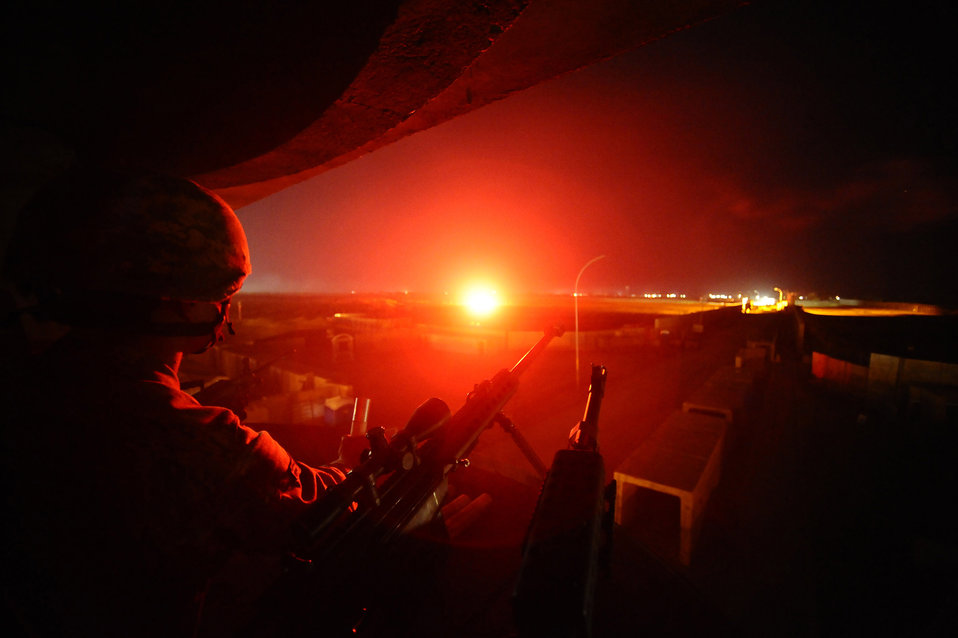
Light 'em up

Airman 1st Class Martin Uresti prepares to fire a signal flare from an observation tower Nov. 15 at Joint Base Balad, Iraq. Several security forces Airmen were practicing their proficiency deploying signal and illumination flares. Airman Uresti is a security forces apprentice with the 532nd Expeditionary Security Forces Squadron deployed from Lackland Air Force Base, Texas. His hometown is Donna, Texas.